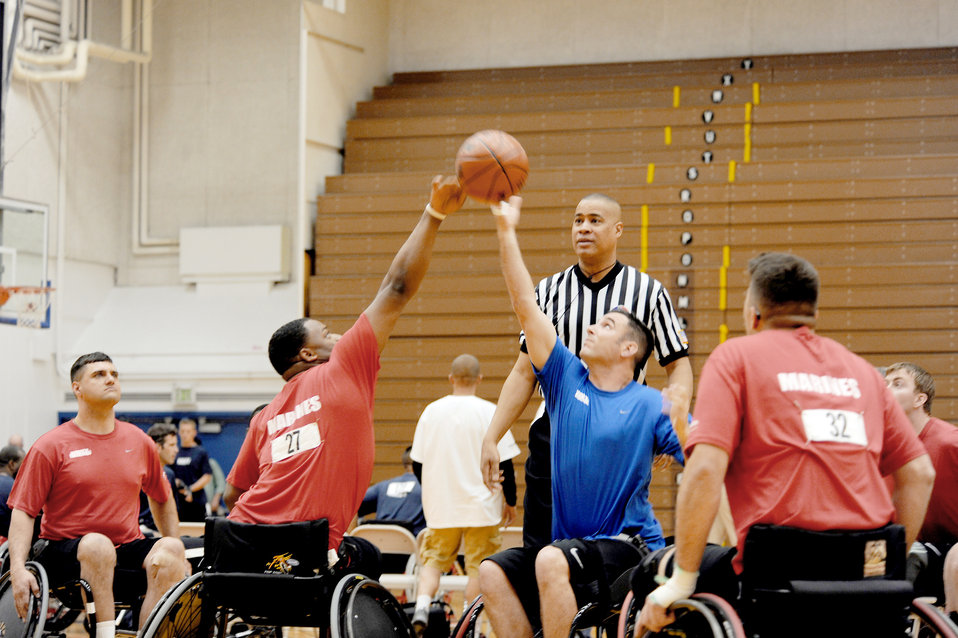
Warrior Games basketball competition

Staff Sgt. Christopher D'Angelo reaches for the basketball during tip off against the Marines in wheelchair basketball May 11, 2010, at the Olympic Training Center in Colorado Springs, Colo. The Warrior Games competition began May 10 and finishes May 14.